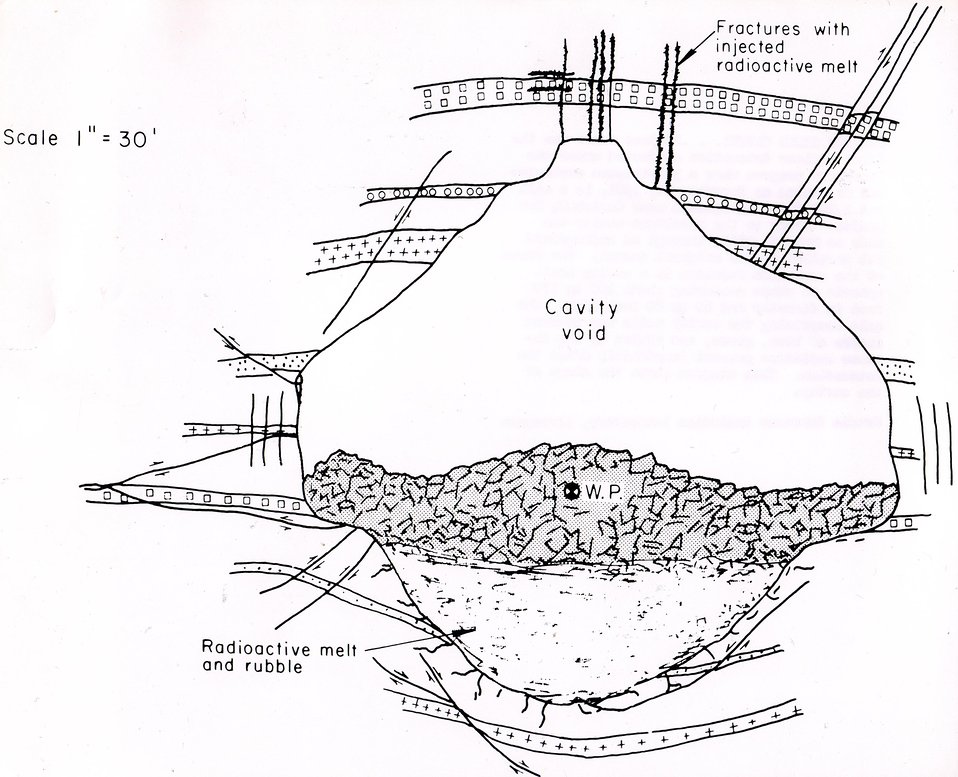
Project Gnome was the first nuclear detonation conducted under the Plowshare Program when a 3.1-kiloton explosive was detonated on December 10, 1961, us a salt bed 1,200 feet underground near Carlsbad, New Mexico. Circa 1963.